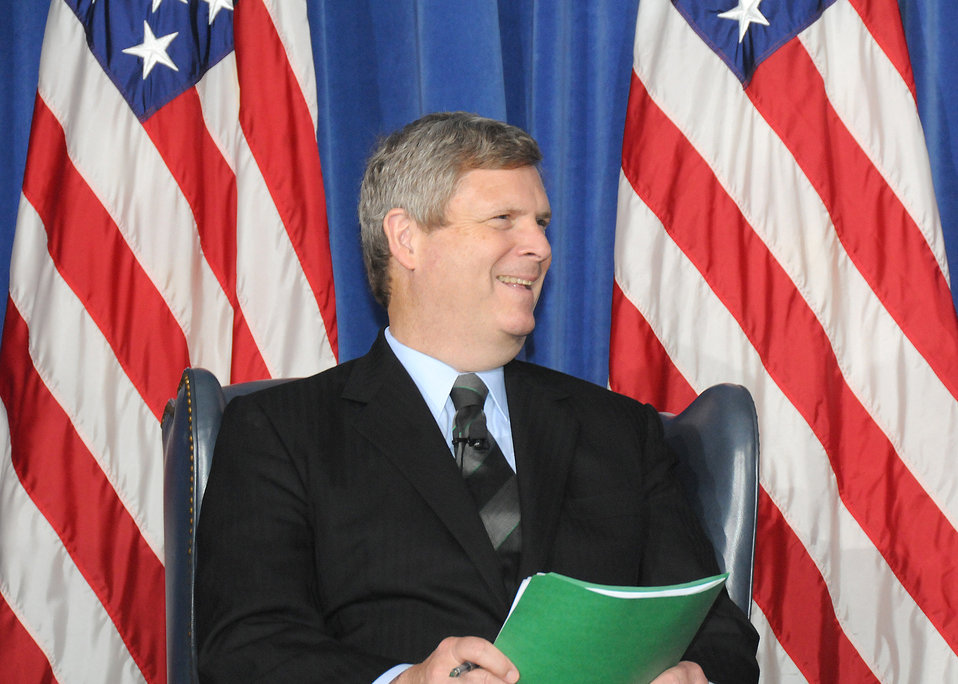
Agriculture Secretary Tom Vilsack reacts to the remarks of a panel member on “Conserving working lands for the benefit of all Americans” at the Interior Department in Washington, D. C. on Friday, April 16, 2010. USDA photo 10di1317-62